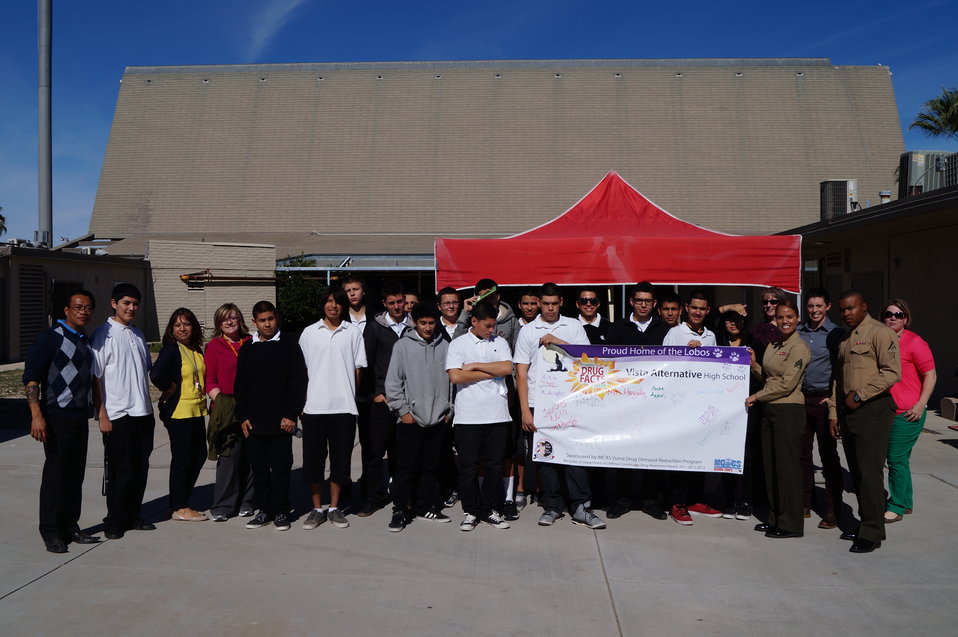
National Drug Facts Week: Vista Alternative HS

The Drug Demand Reduction Program out of Yuma Arizona held numerous events at local schools to support NIDA's National Drug Facts Week, Jan. 27-Feb. 2 2014. Teens participated in drug awareness games, and helped to Shatter the Myths about teen substance abuse.